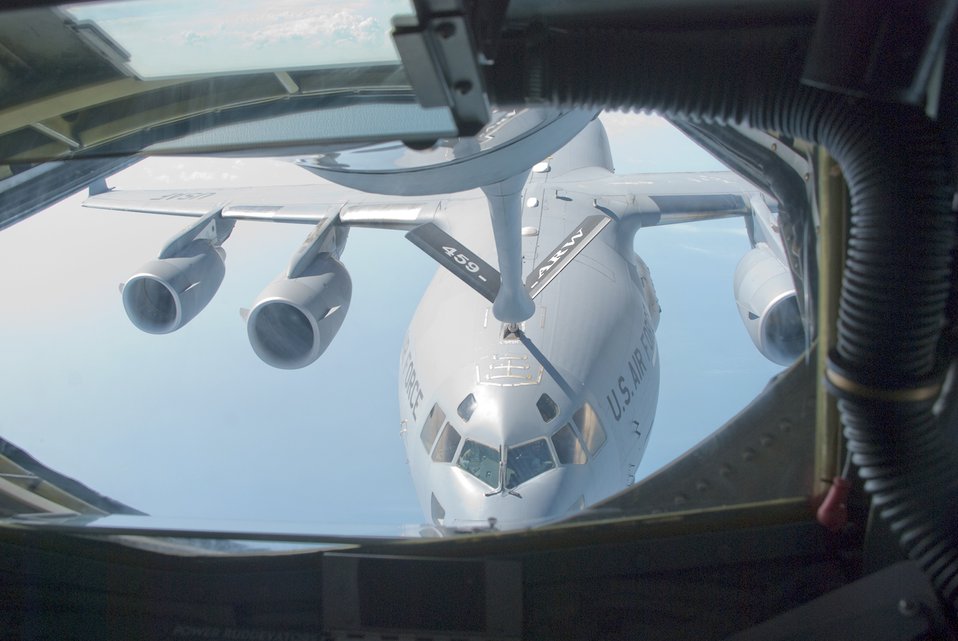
Aerial refueling, on the spot

Members of the Air Force Reserve Command's 459th Air Refueling Wing refuel a C-17 Globemaster III Aug. 14 2010, over Joint Base Andrews, Md.